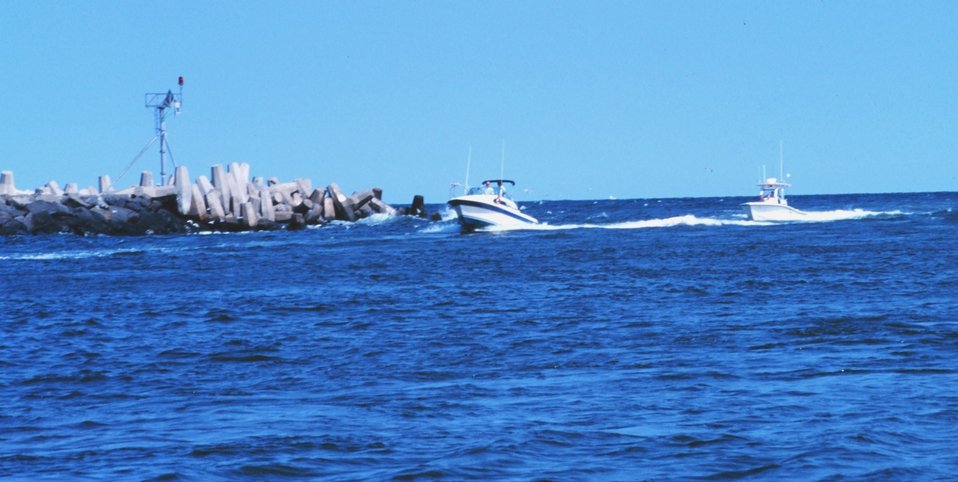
Recreational fishing boats passing the jetties at Manasquan Inlet